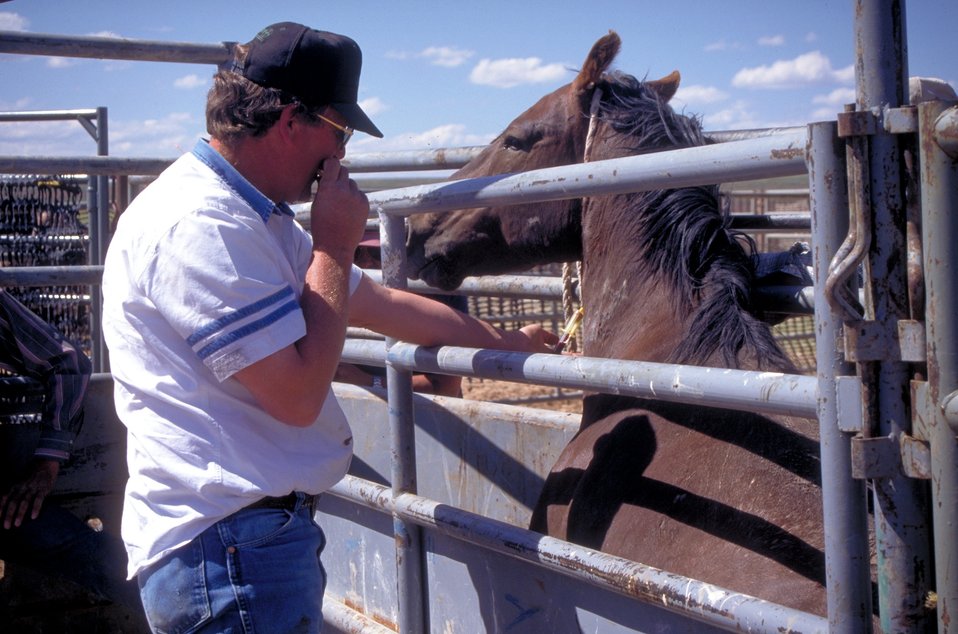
EIA testing near Vernal, Utah.